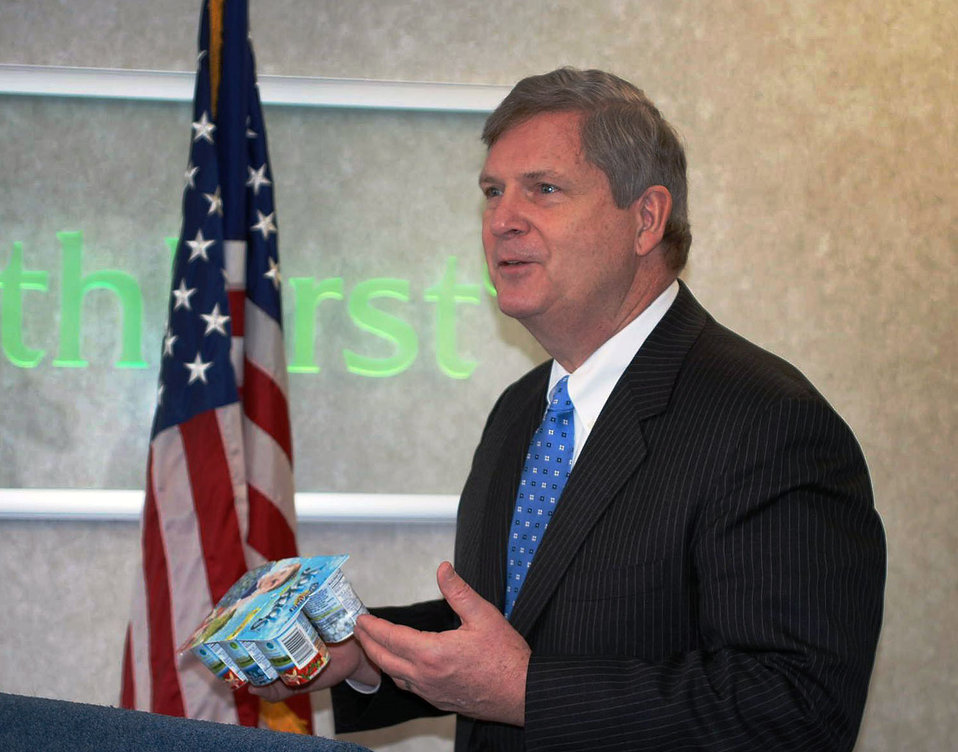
Agriculture Secretary Tom Vilsack points to environmentally friendly “YoKids” Yogurt containers during remarks to media and private and public stakeholders at Plastic Suppliers Inc. in Columbus, OH on Friday, Jan. 31, 2014.